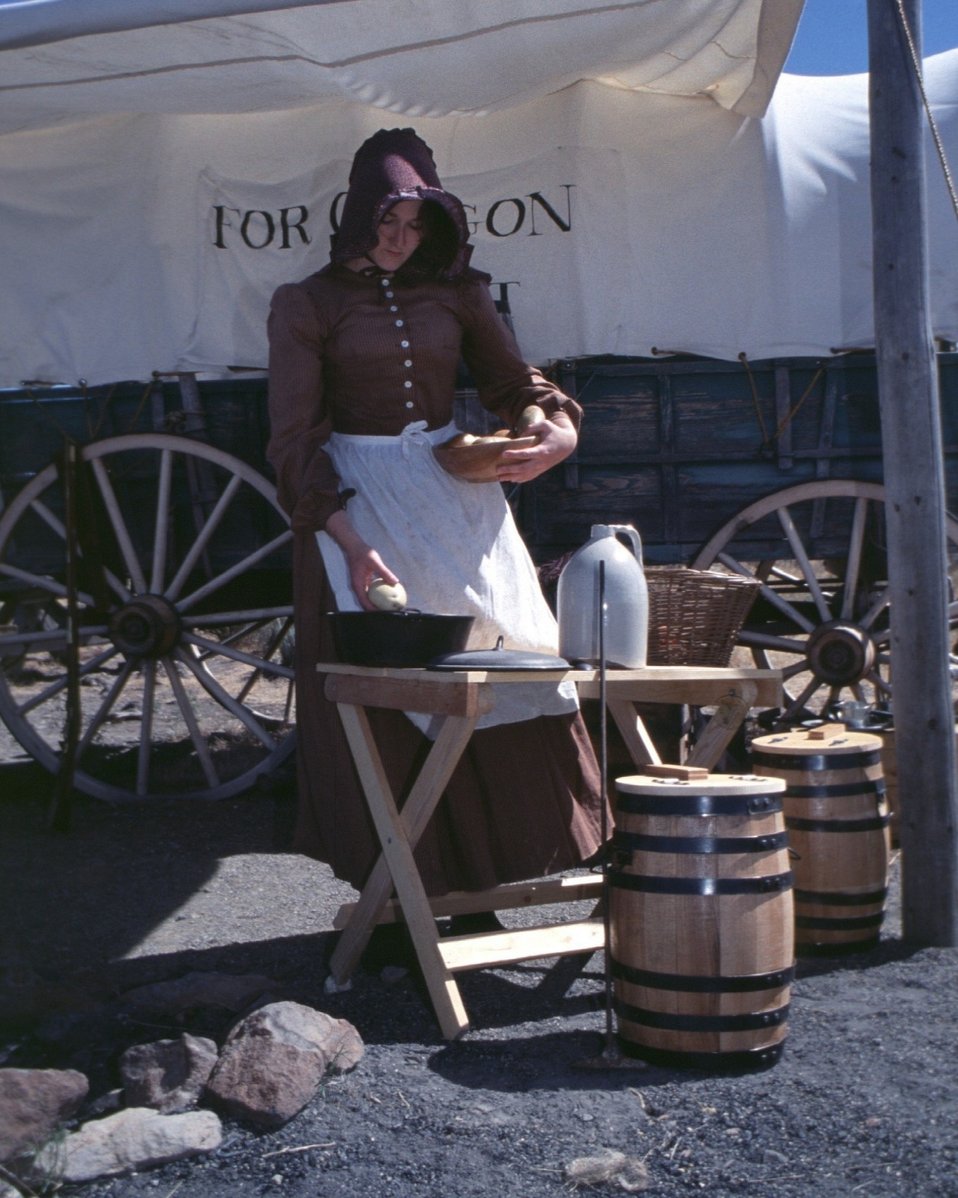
Rebecca Crow portrays a pioneer woman cooking on the Oregon Trail.